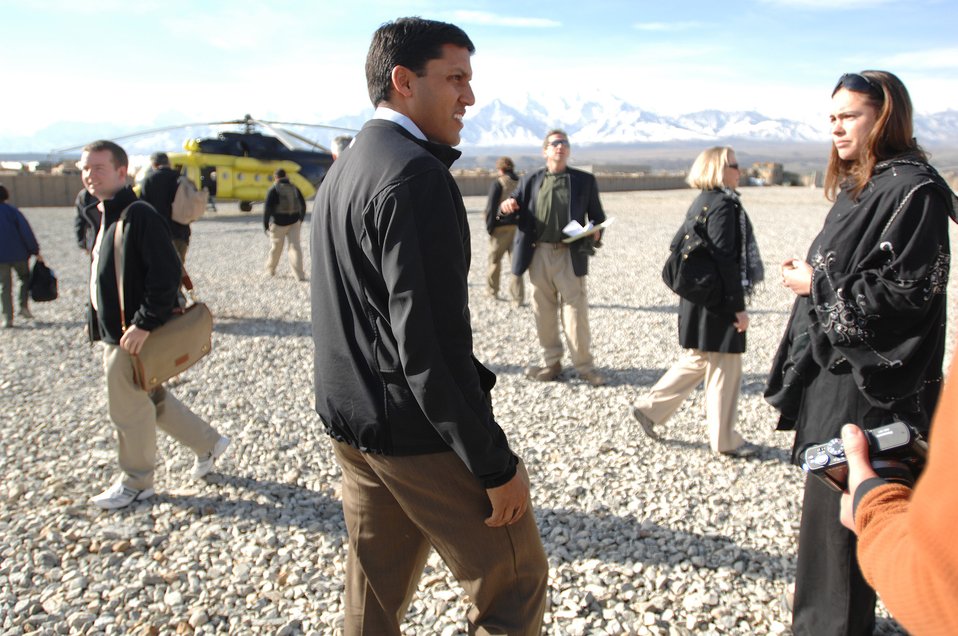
110209sv Shah088

Dr. Rajiv Shah, Administrator of the United States Agency for International Development (USAID), arrives at FOB Connolly in Nangarhar province on Wednesday, February 9, 2011. (S.K. Vemmer/Department of State)